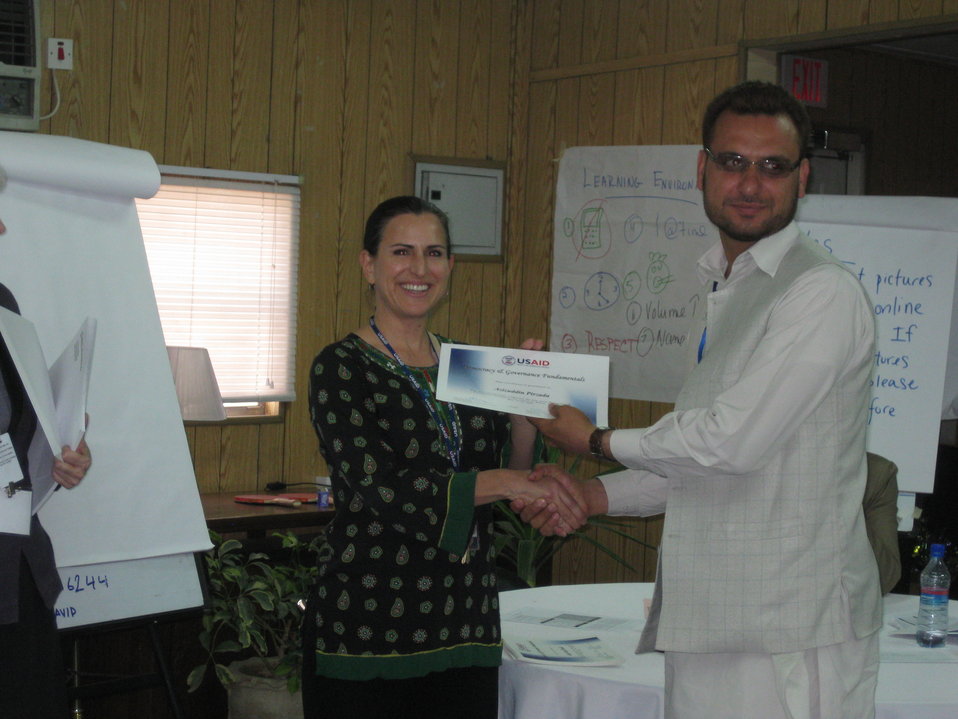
Afghan Youth Voices 056